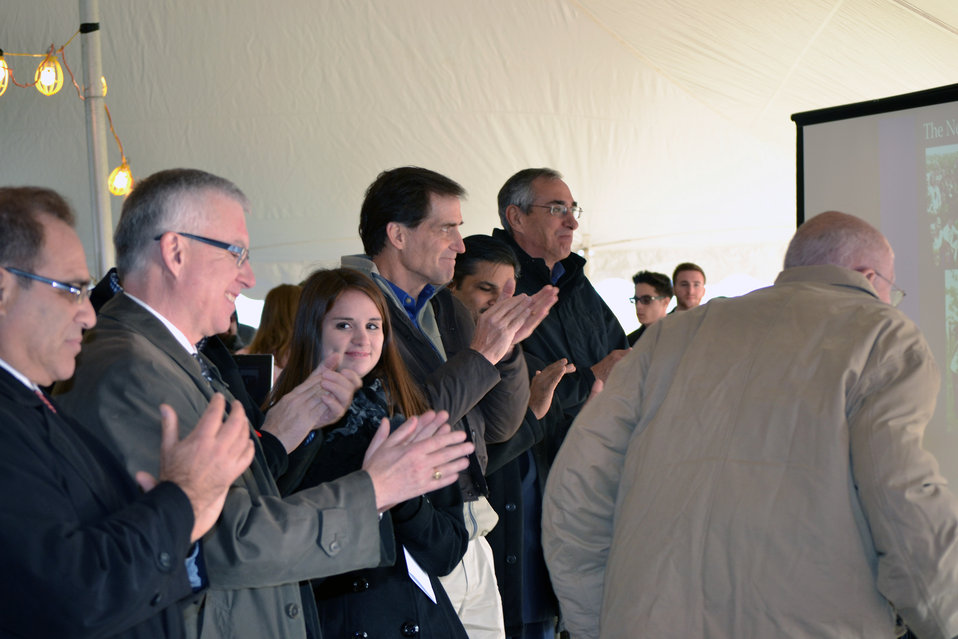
MarkingtheDay

Detroit River International Wildlife Refuge groundbreaking celebration.